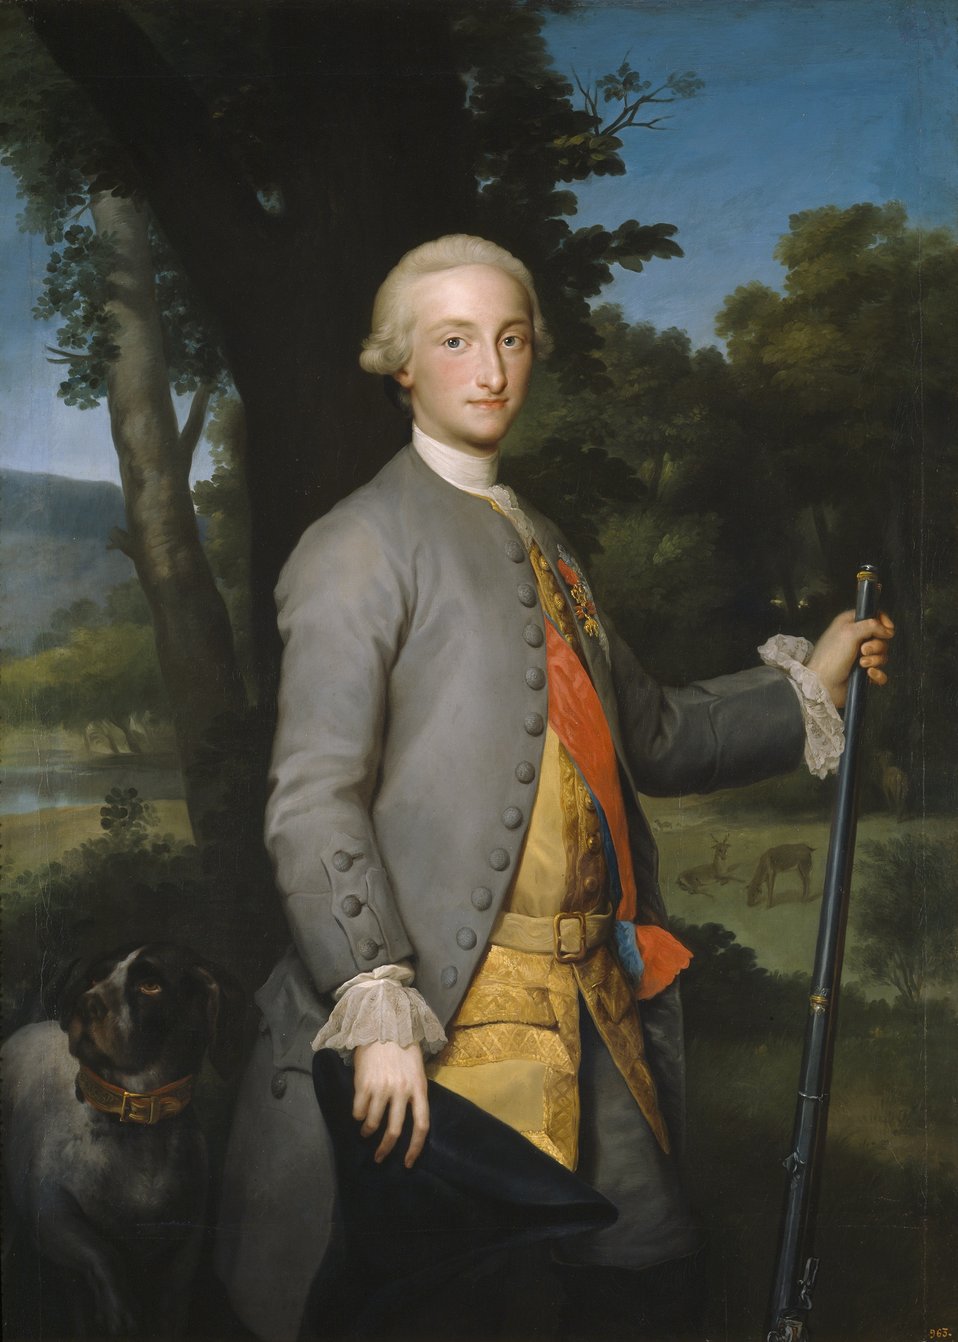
Anton Raphael Mengs, Prince of Asturias, Future Charles IV of Spain (са 1765) - 02